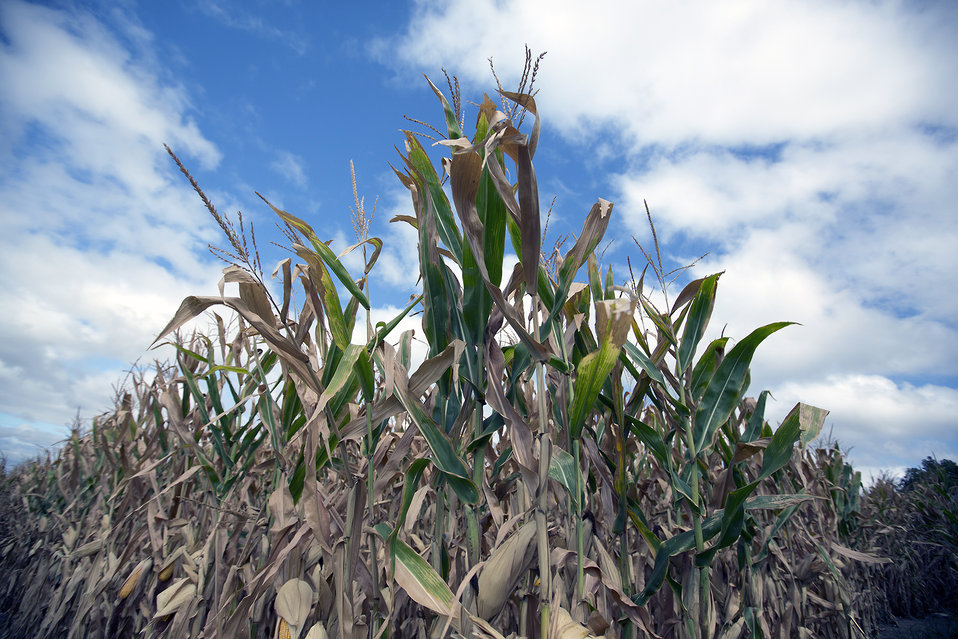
President Barack Obama and Agriculture Secretary Tom Vilsack visited the McIntosh family farm in Missouri Valley, Iowa, on Monday, August 13, 2012 to view the drought stricken crops. The federal government has already taken some steps to ease farmers whose crops are growing poorly this summer, and the administration plans to spend close to $200 million on livestock, officials announced earlier in the day. The Department of Defense is encouraging vendors to buy meat to ease the crisis.